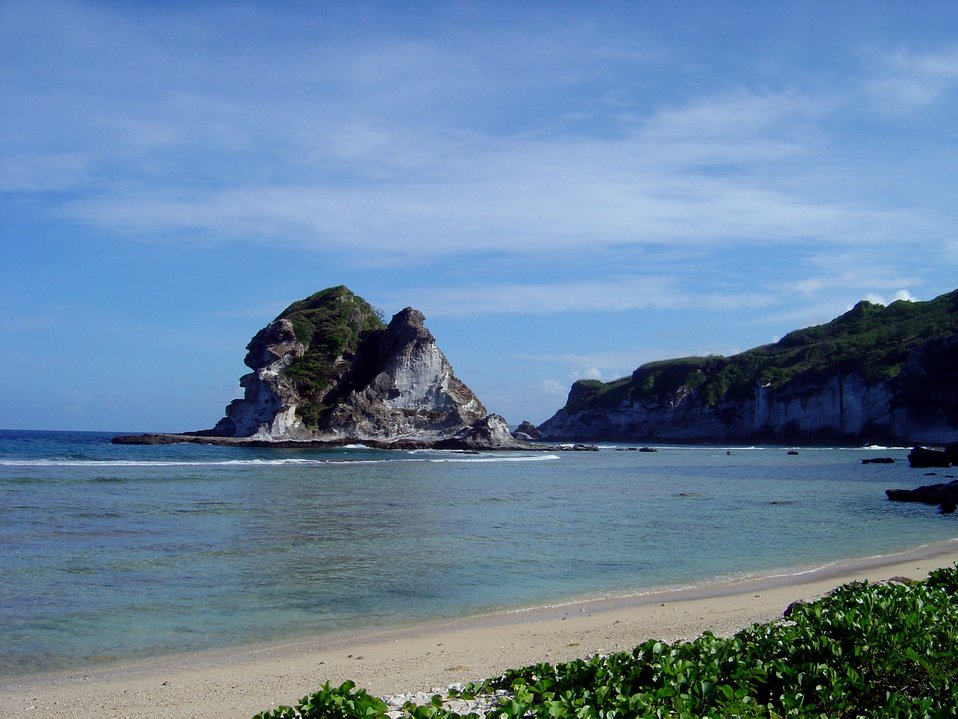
Bird Island, Saipan.